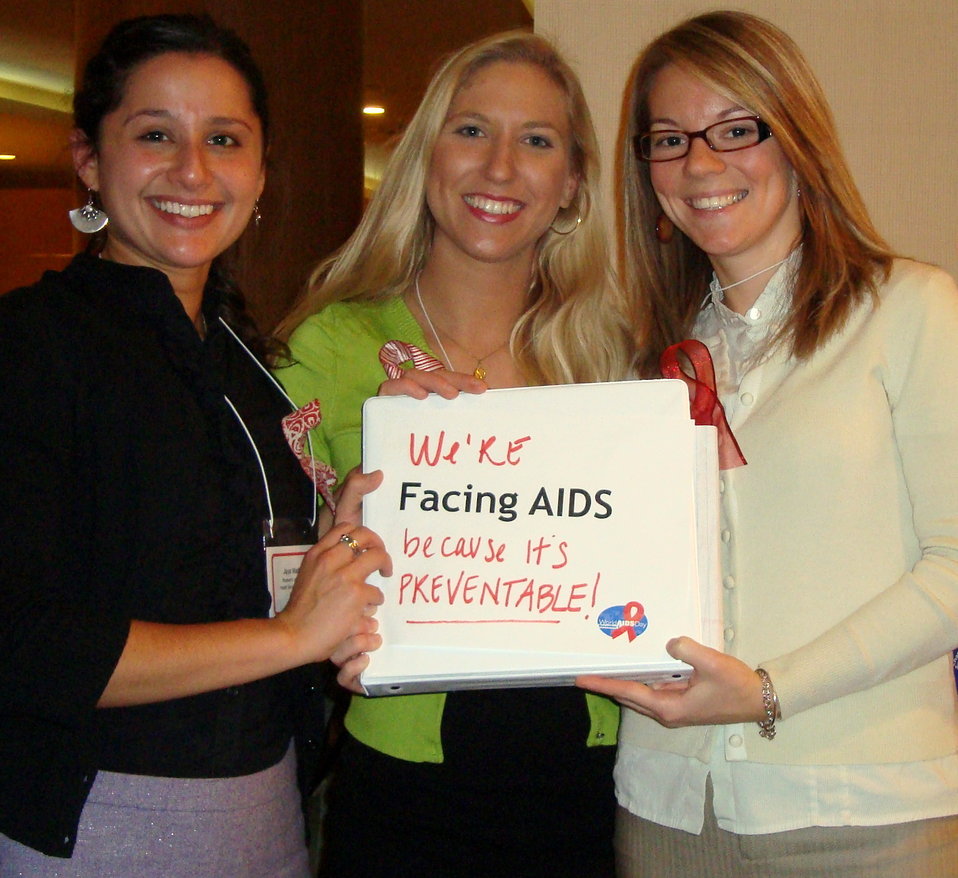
FacingAIDSCampaign 026